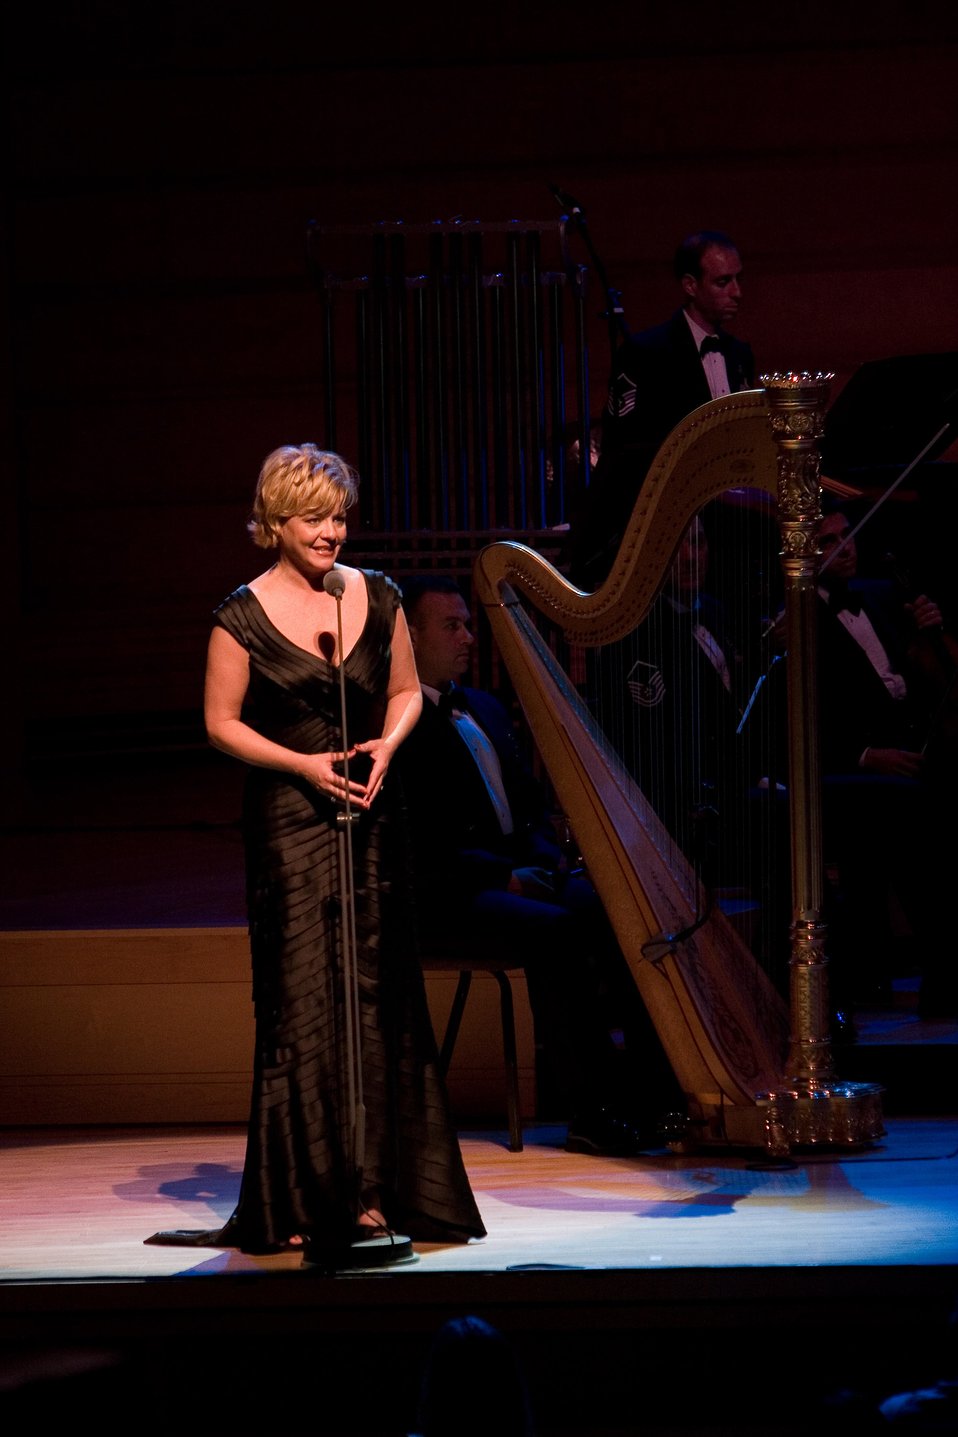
AF anniversary concert airs nationwide Nov. 2

Veteran broadcaster and entertainer Mary Therese Tebbe hosts 'The 60th Anniversary of the Air Force: A Musical Celebration.' The U.S. Air Force Band produced the program at the Music Center at Strathmore in Bethesda, Md. June 30, for national broadcast on Veteran's Day 2007.